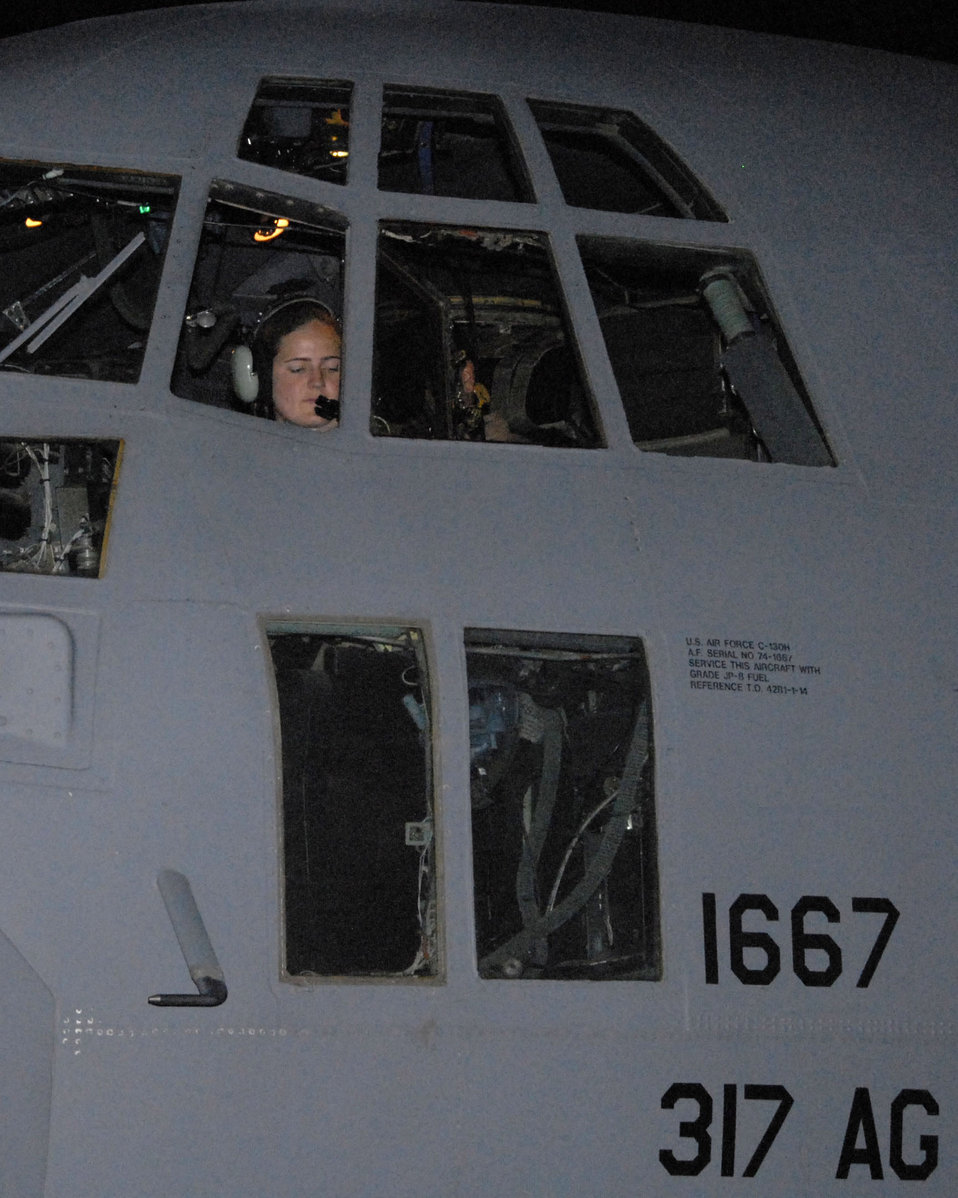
Special delivery

Capt. Nancy Badgett goes through her preflight checklist before engine start-up May 13 at a Southwest Asian air base. Captain Badgett was the aircraft commander of a mission that dropped off and picked up Soldiers and civilians to and from an air base in Iraq. Captain Badgett is a C-130 Hercules pilot with the 737th Expeditionary Airlift Squadron deployed from Dyess Air Force Base, Texas.